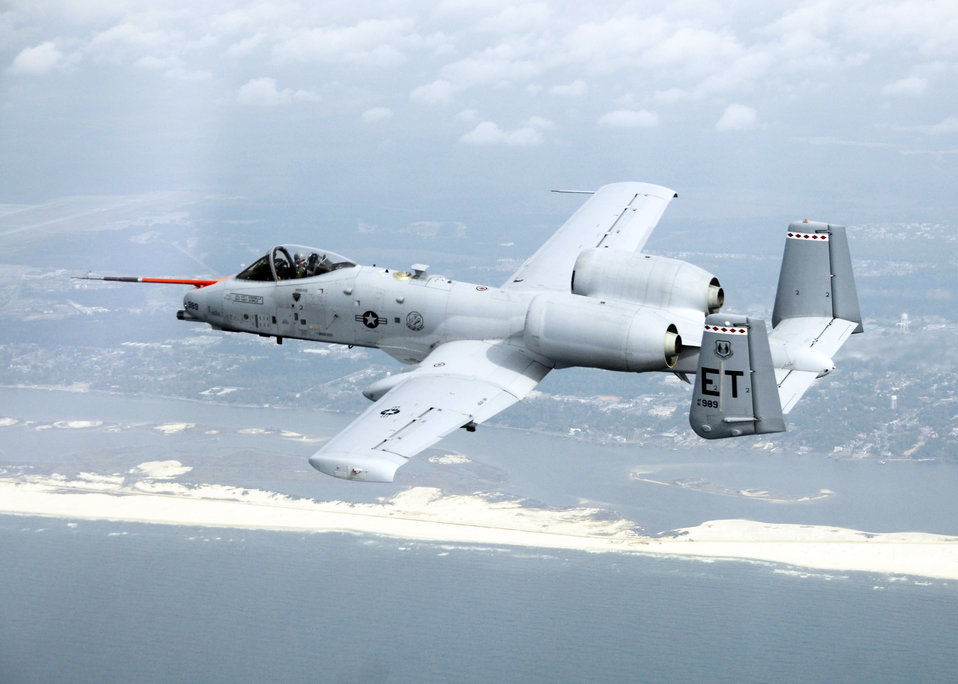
Biofuel flight

An A-10C Thunderbolt II from Eglin Air Force Base, Fla., flies along the coast of Florida March 25, 2010, during the first flight of an aircraft powered solely by a biomass-derived jet fuel blend. The A-10 was fueled with a 50/50 blend of Hydrotreated Renewable Jet and JP-8.